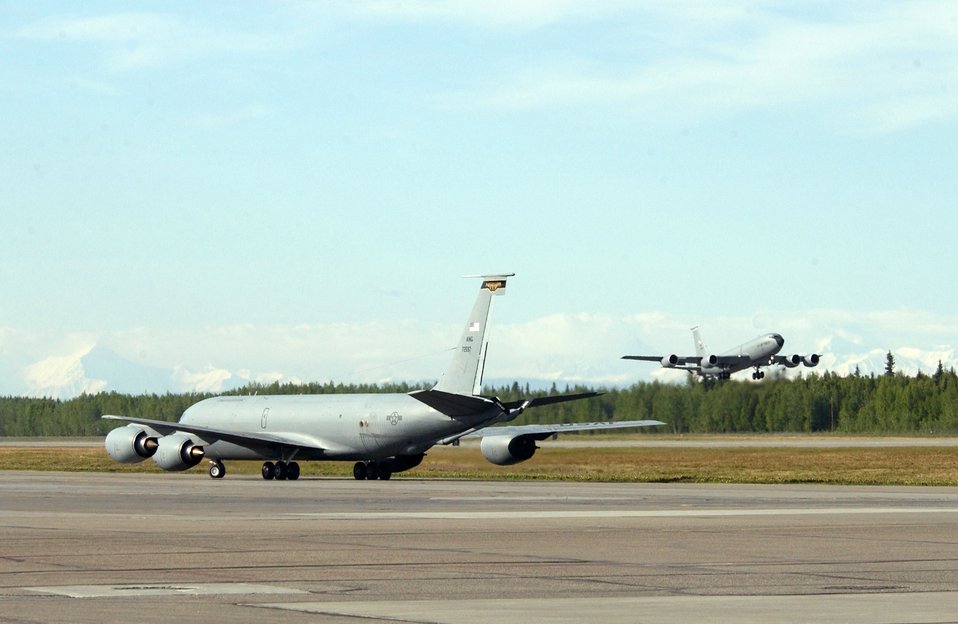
Northern Edge aims for air, sea dominance

A KC-135 Stratotanker from the New Hampshire Air National Guard takes off past a Mississippi ANG KC-135 on Tuesday, June 6, 2006, during Exercise Northern Edge 2006. The joint training exercise hosted by Alaskan Command is one of a series of U.S. Pacific Command exercises that prepare joint forces to respond to crises in the Asian Pacific region.